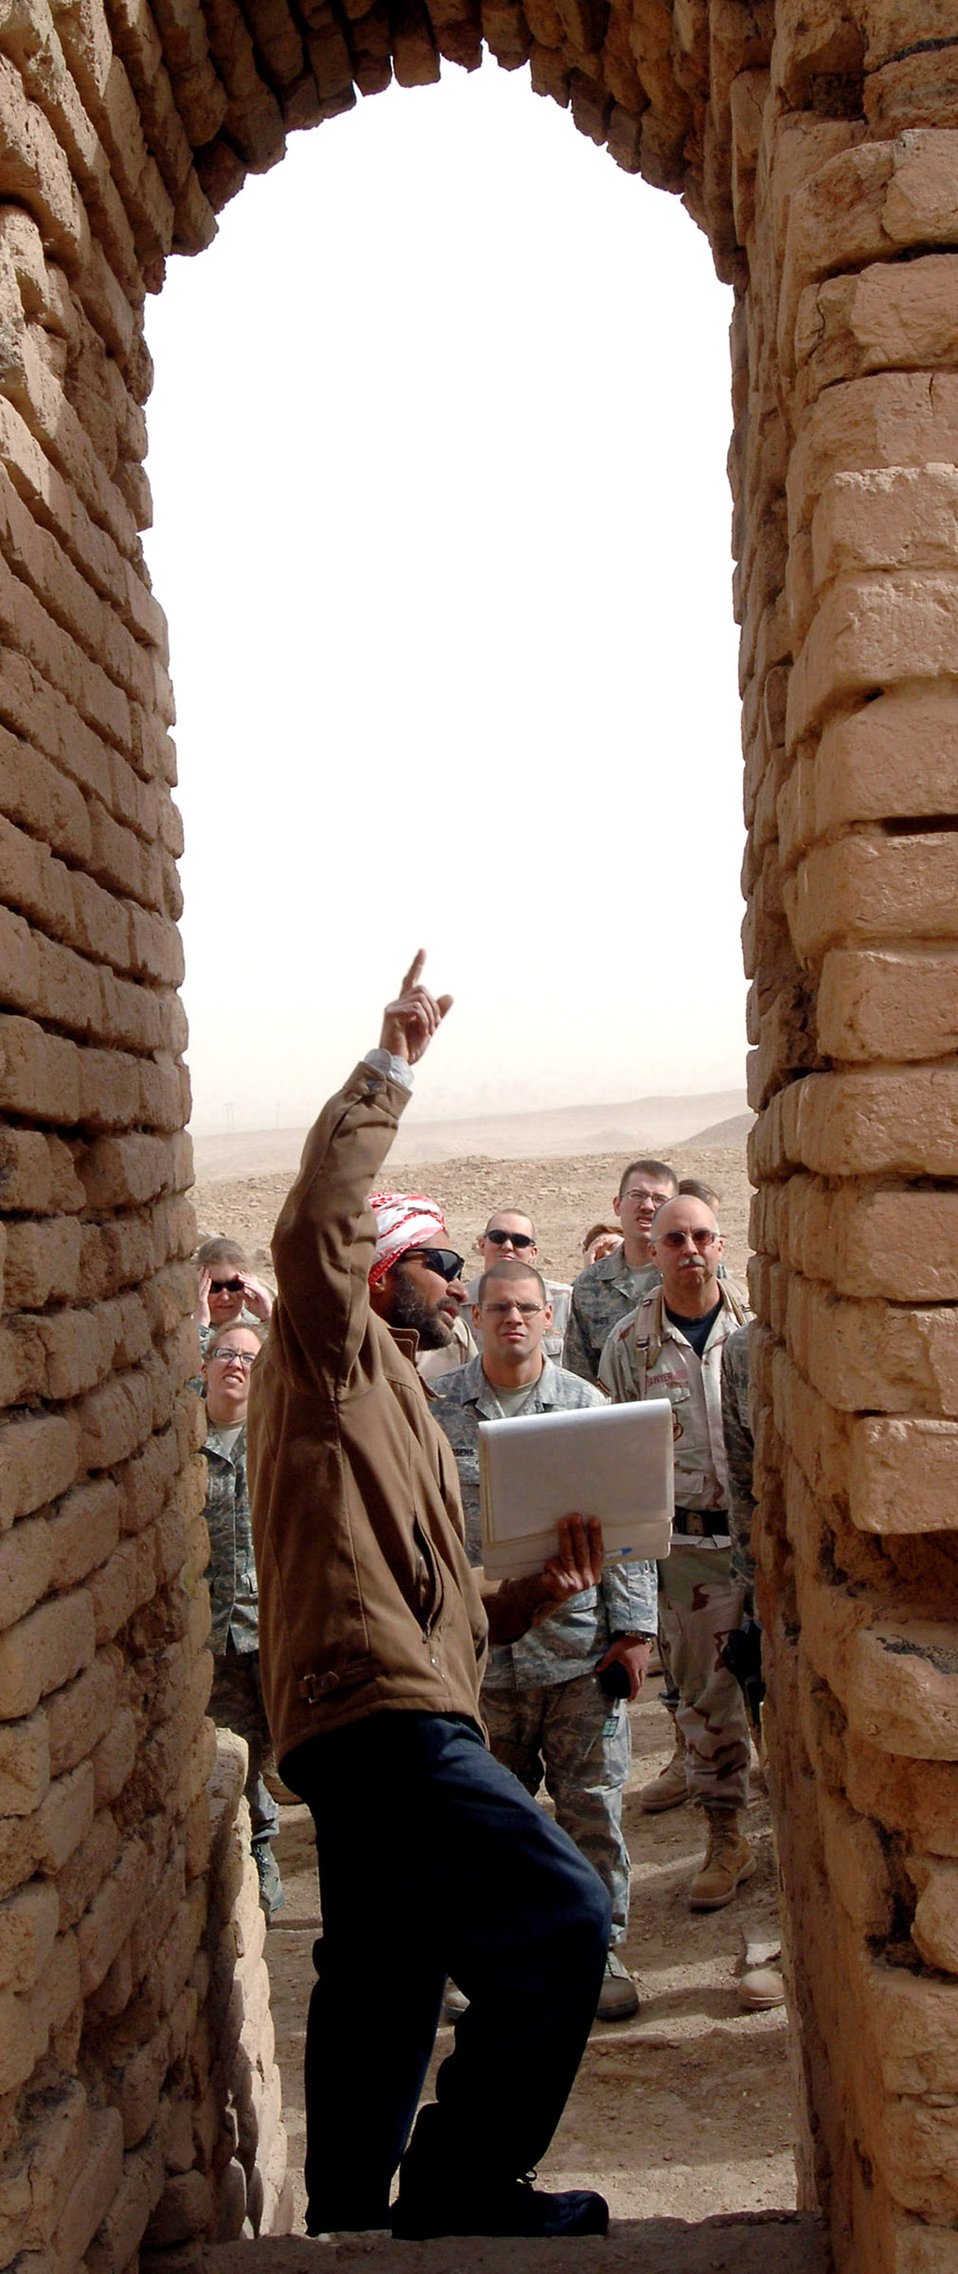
Stepping back into history

Dhaif Muhsen, a 3rd generation curator of the Ziggurat at Ur in southern Iraq, explains the historic ruins Feb. 19 to Airmen from the 407th Air Expeditionary Group. The Airmen were on a chapel-sponsored trip to view the house of the biblical patriarch Abraham.